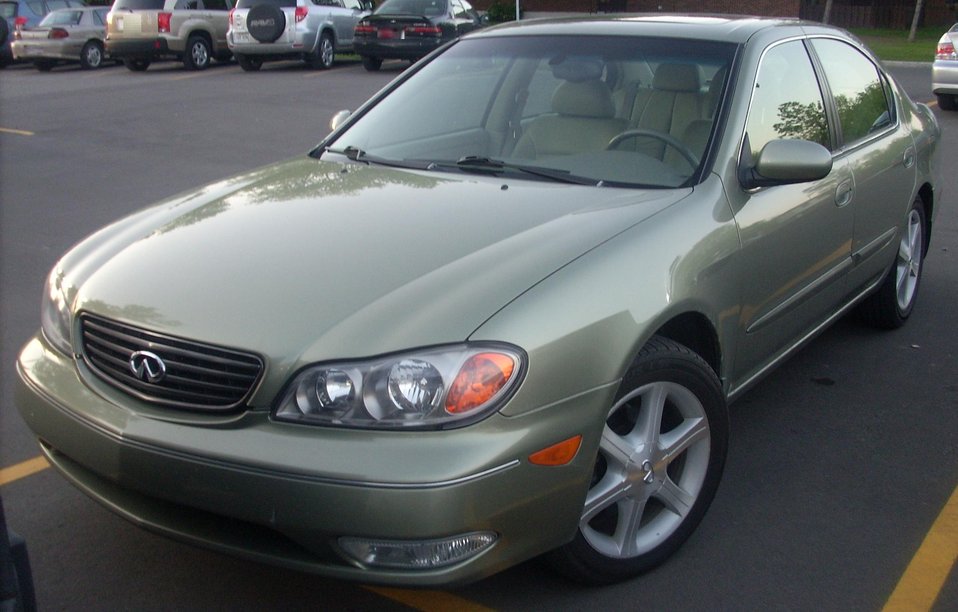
2002-2004 Infiniti I35 photographed in Montreal, Quebec, Canada.